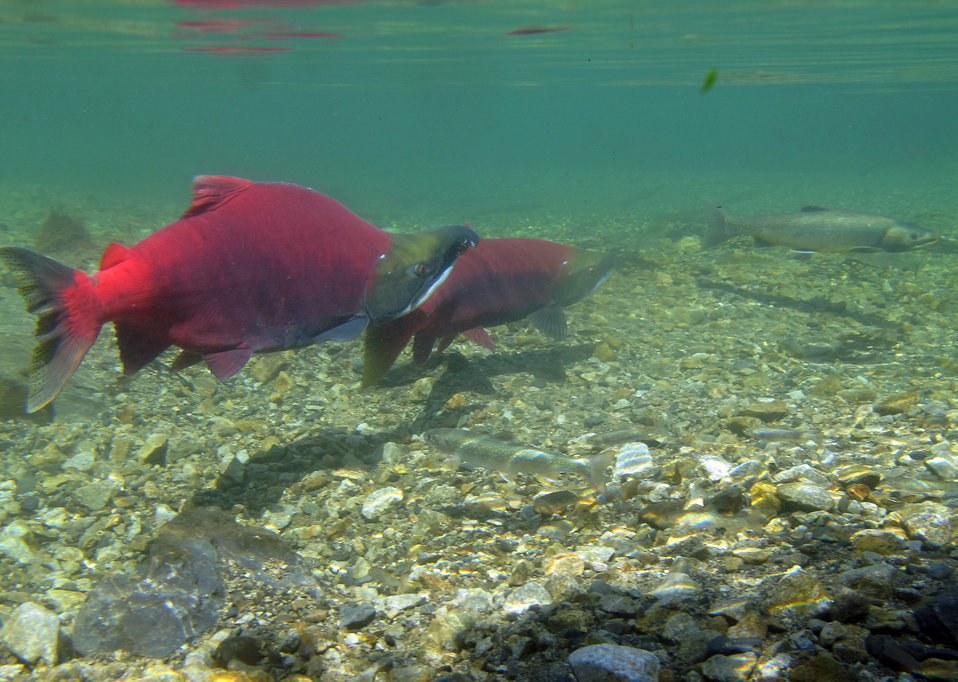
Dollies and sockeyes

Dolly Varden Char hanging around 2 spawning sockeye on Kodiak Island. USFWS/Katrina Mueller